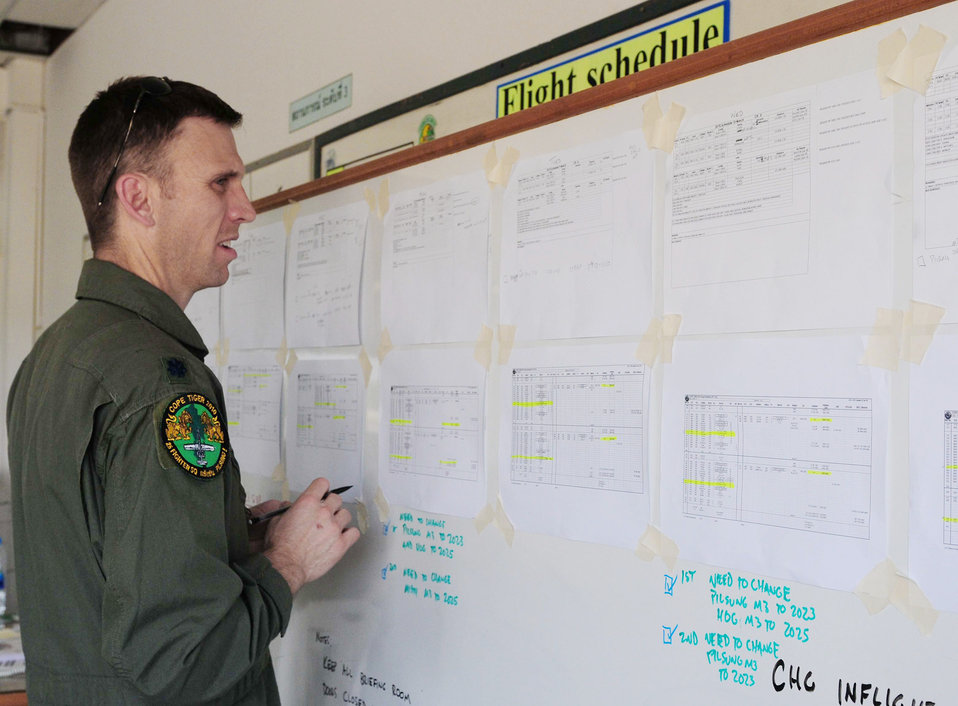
Airmen take flight at Cope Tiger

Lt. Col. Charles Wahl amends the flight schedule for A-10 Thunderbolt II operations March 4, 2010, at Udon Thani Royal Thai Air Force Base, Thailand, as part of Cope Tiger 2010. Colonel Wahl is deployed to the exercise from the 25th Fighter Squadron at Osan Air Base, South Korea.